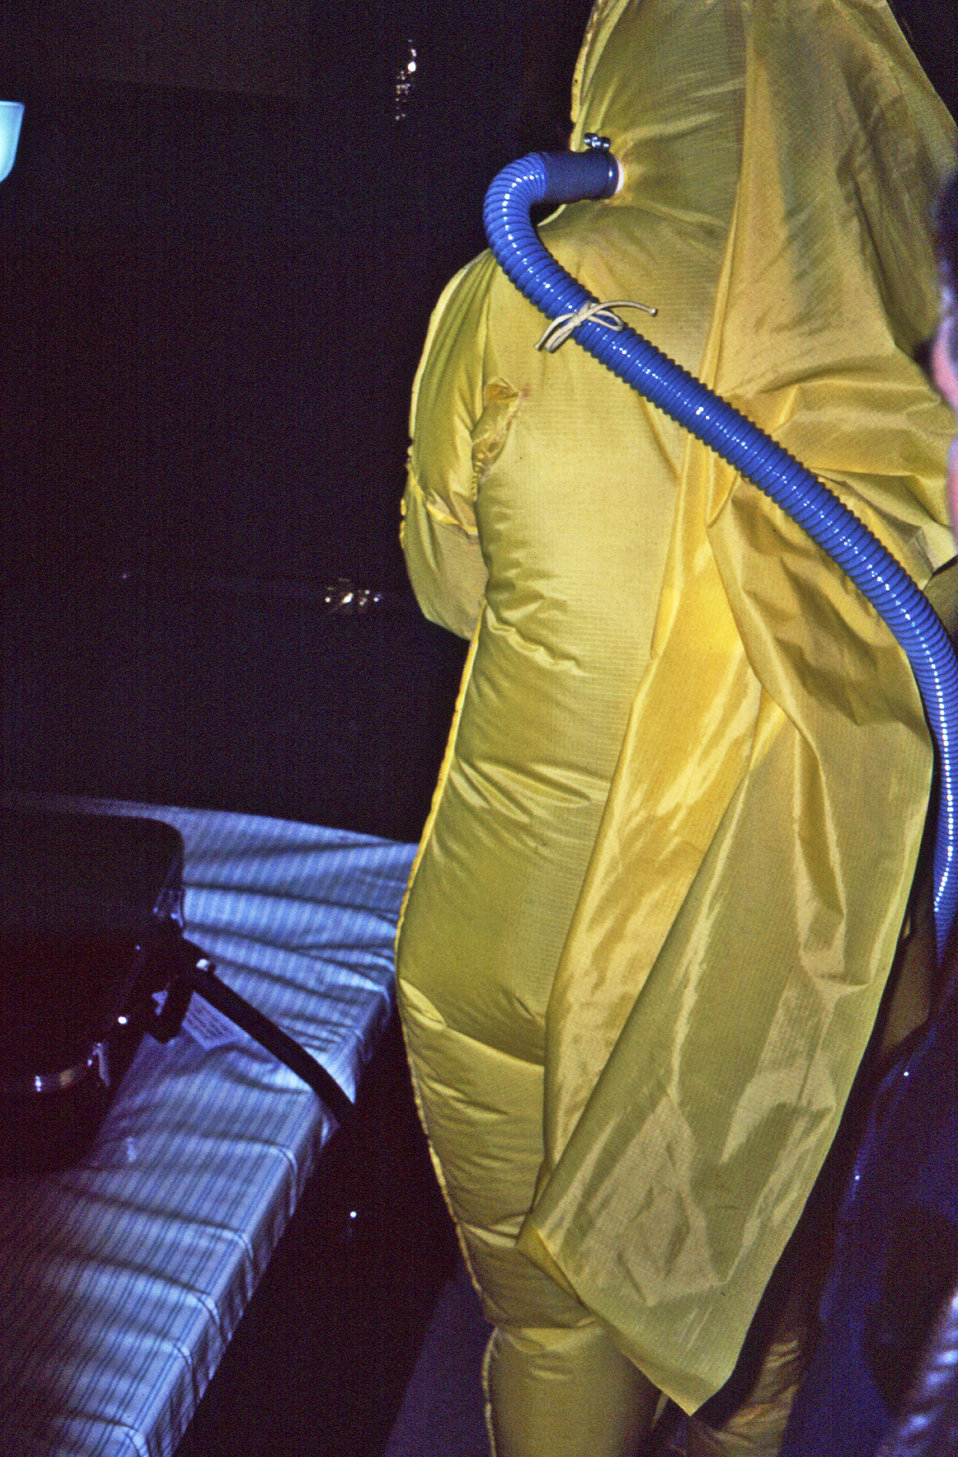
This 1976 photograph was taken during a medical quarantine simulation in a mobile quarantine facility (MQF), and depicted the back of an individual wearing an early-model lab containment suit.